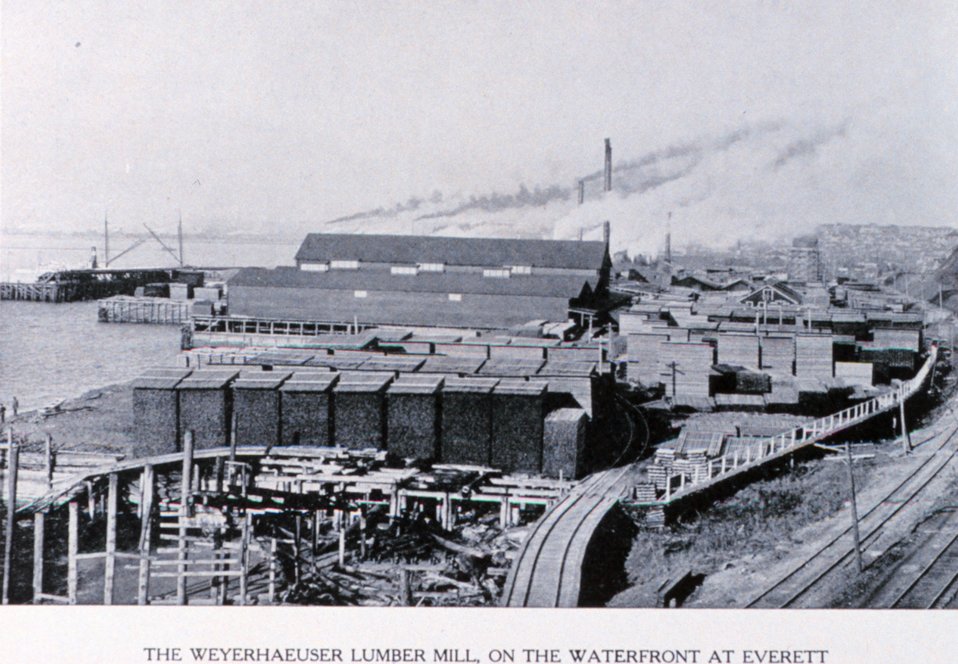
'The Weyerhaeuser Lumber Mill, on the Waterfront at Everett'. In: 'Puget Sound and Western Washington Cities-Towns Scenery', by Robert A. Reid, Robert A. Reid Publisher, Seattle, 1912. P. 92.